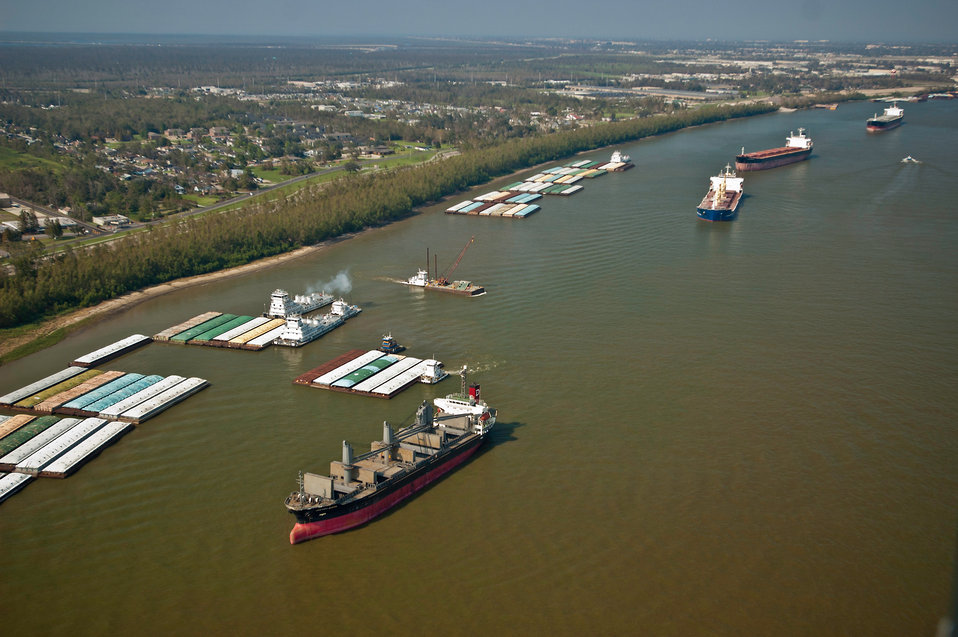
Barge and ship traffic transport export cargo on the Mississippi River in the Port of New Orleans, New Orleans, LA on Sept. 9, 2005.